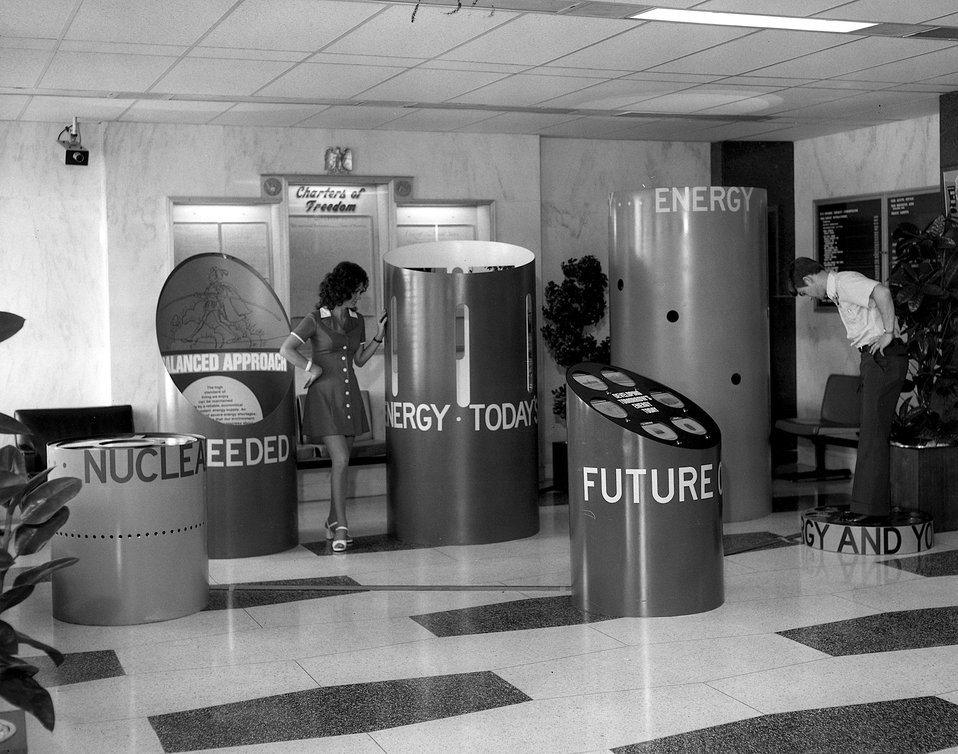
The AEC has a series of exhibits for use at conferences, shopping centers, libraries and museums. One such exhibit covers 'Energy' and explains mankind's efforts to satisfy growing energy demands. c. 1974